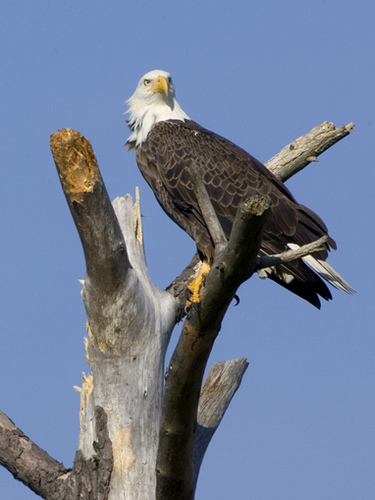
An American Bald Eagle in a tree at Blackwater National Wildlife Refuge, MD.